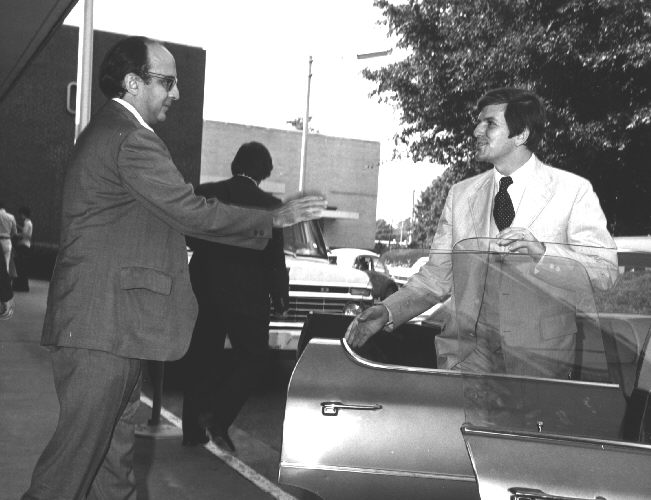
DHEW Secretary, F. David Mathews visits CDC.